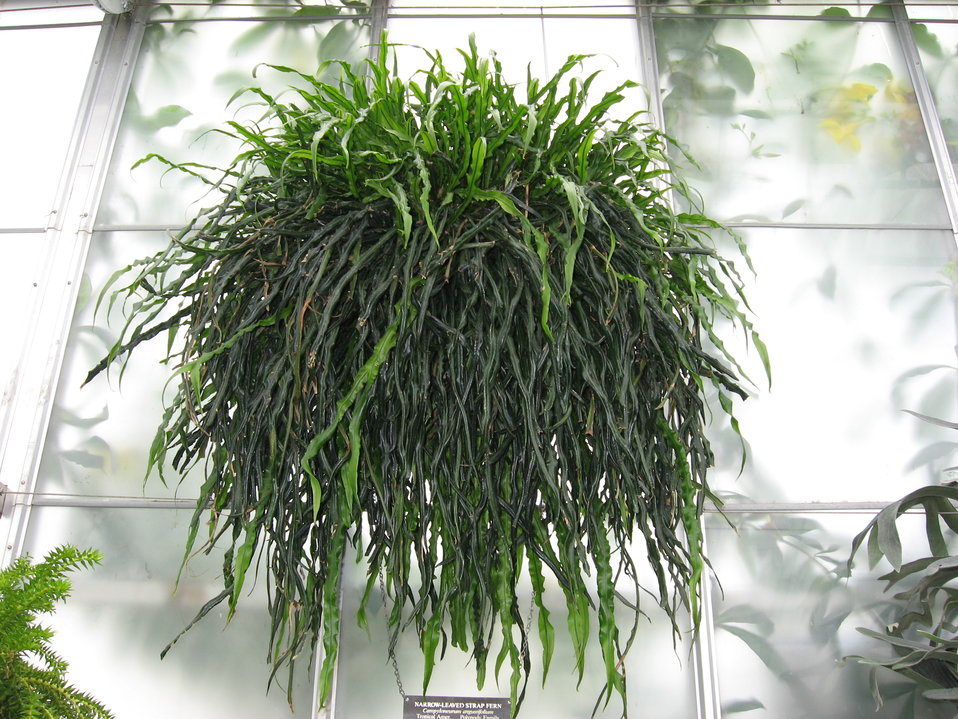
A picture of Campyloneurum angustifolium.